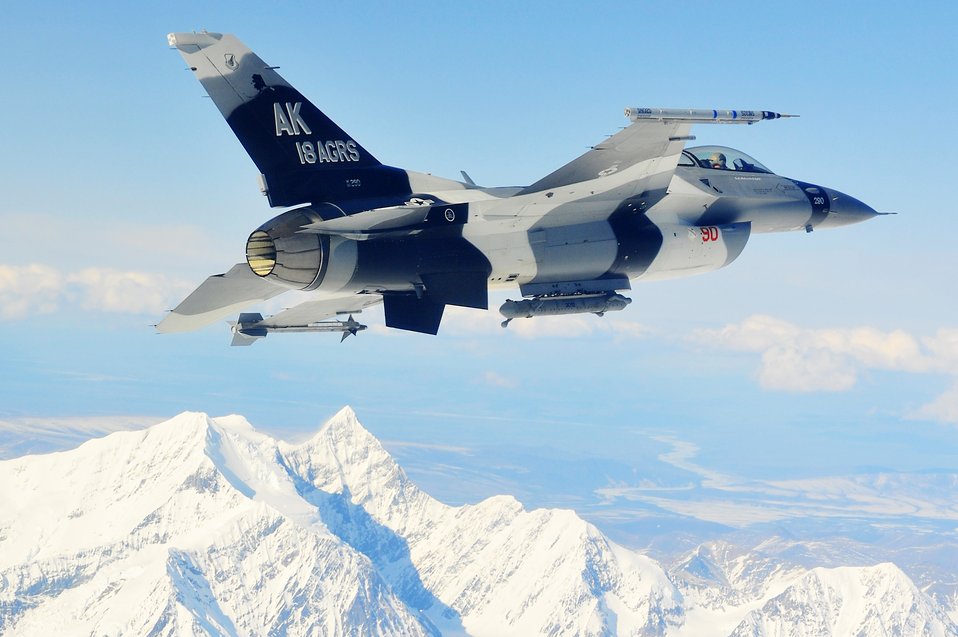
Looking to stir things up

An F-16 Fighting Falcon from the 18th Aggressor Squadron at Eielson Air Force Base, Alaska, soars over the Alaska Range April 20, 2010, during Red Flag-Alaska. Aggressor pilots are trained to act as opposing forces in exercises like Red Flag to better prepare Air Force pilots for air combat.